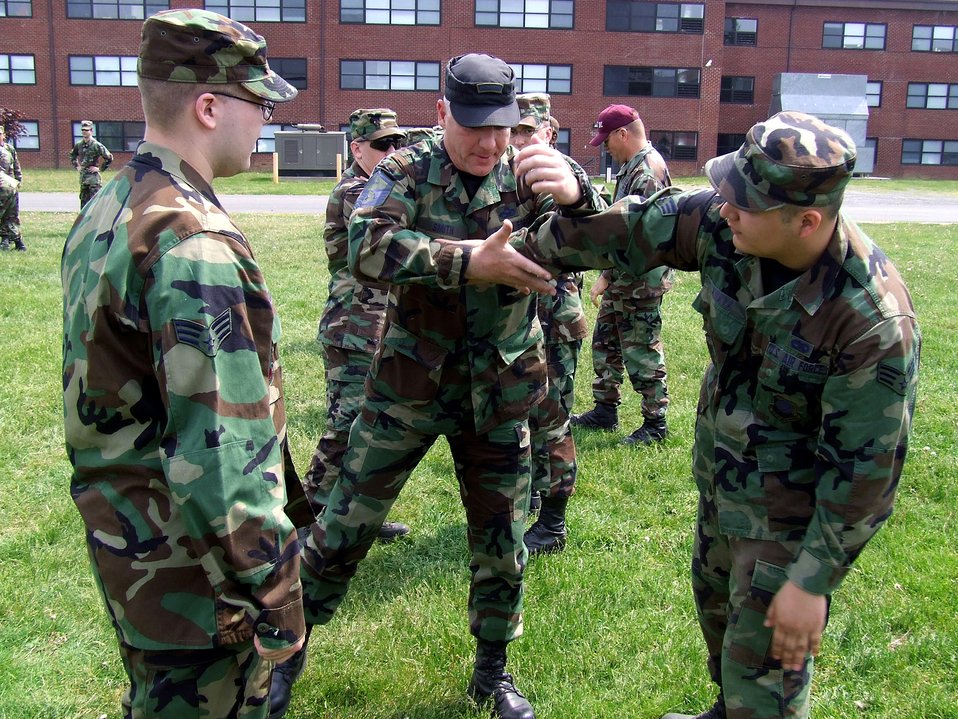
Self defense course kicks way into training

Master Sgt. Jack Smith teaches students in the Advanced Contingency Skills Training Course one of the moves in Linear Infighting Neural-override Engagement, or LINE, training during a class session May 16 at the U.S. Air Force Expeditionary Center on Fort Dix, N.J. LINE training is one of the newest training techniques offered at the center. Sergeant Smith is a 421st Combat Training Squadron instructor.